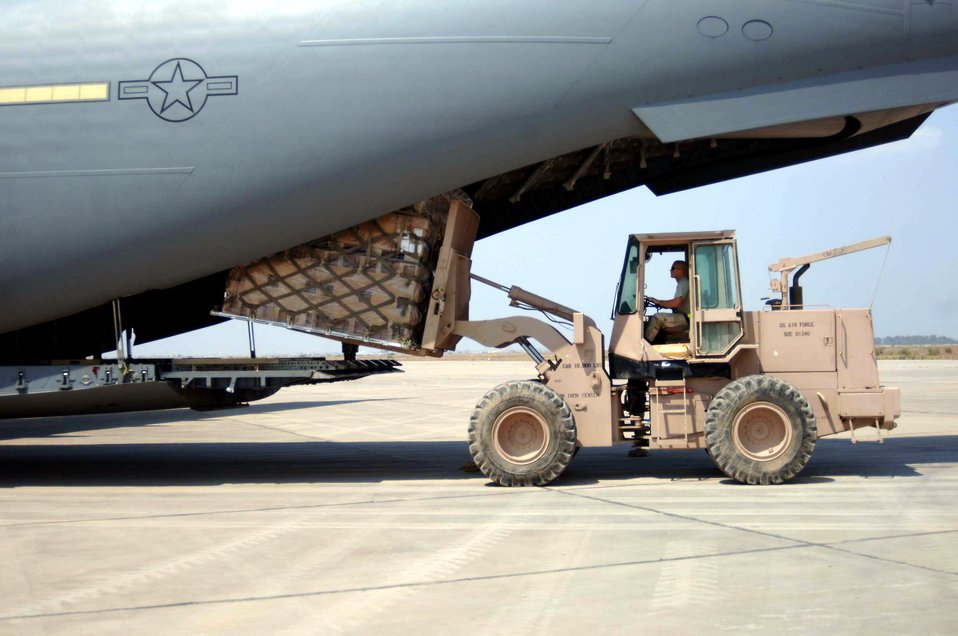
CENTAF Airpower Summary for April 12, 2007

Staff Sgt. Frank Douglass unloads a pallet of cargo from a C-17 Globemaster III April 12 at Baghdad International Airport, Iraq. Sergeant Douglass is with the 447th Air Expeditionary Group's Logistics Readiness Group. Aerial porters there have moved more than twenty-thousand tons of cargo since mid January.